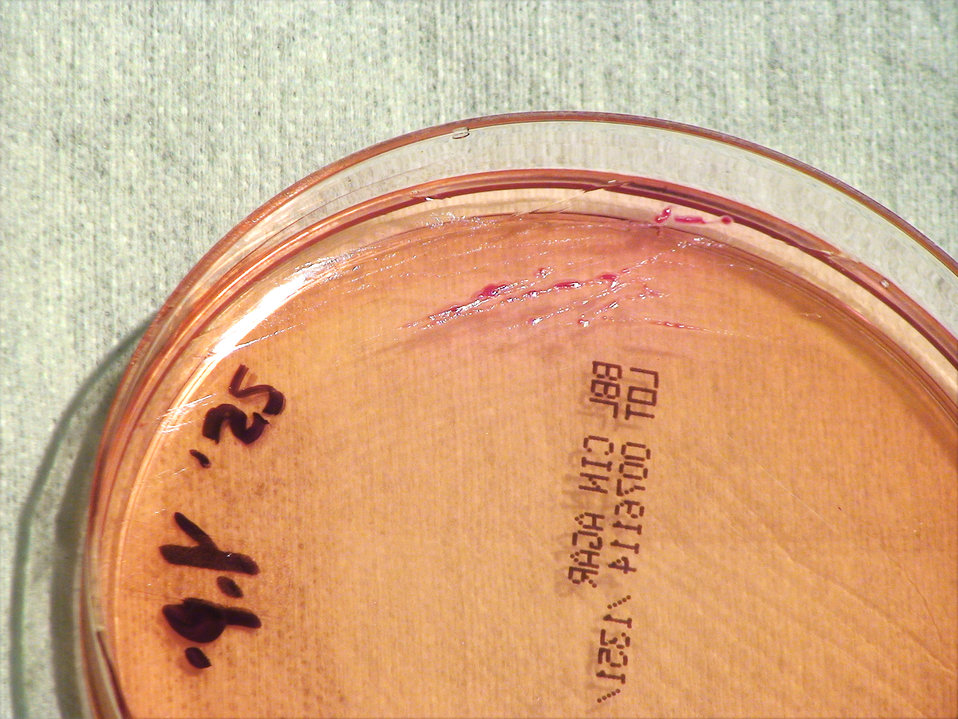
A closer view of PHIL 12465, this photograph depicts the colonial morphology displayed by Gram-negative Yersinia pestis bacteria, which was grown on a medium of Cefsulodin Irgasan Novobiocin (CIN) agar, for a 24 hour time period, at a temperature of 25�C. Also see PHIL 12467, for the appearance of Y. pestis colonies grown on the same medium, and at the same temperature, but for twice the time period (48hr). This organism is pathogenic towards humans, and is responsible for causing the disease known as plague.